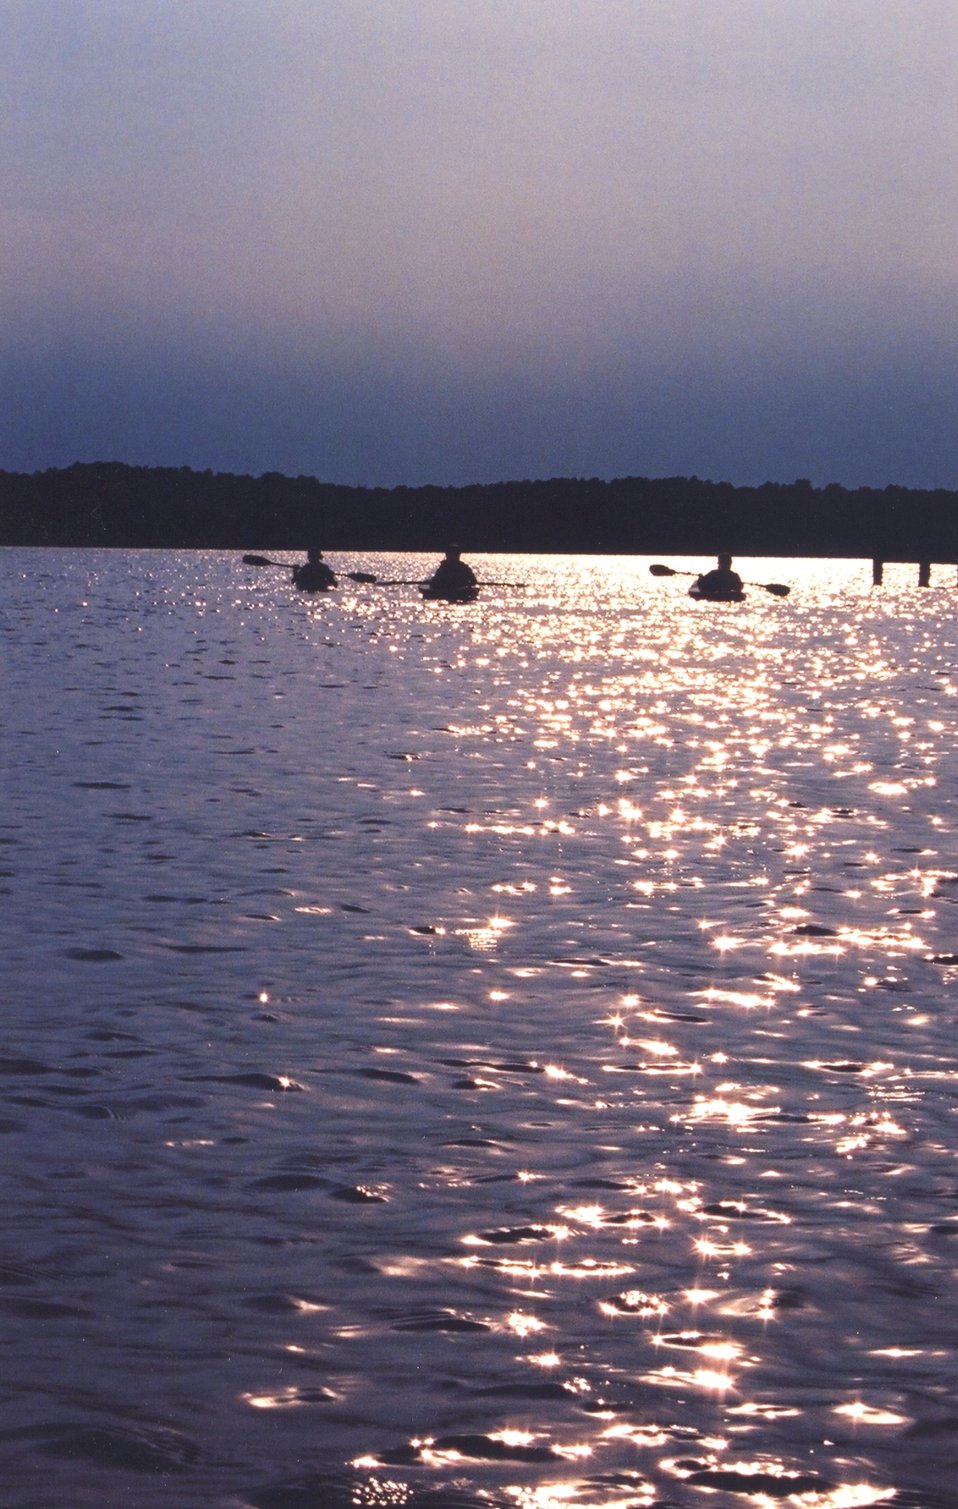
Late afternoon sun-glint on the lower Patuxent River silhouetting a group of kayakers.